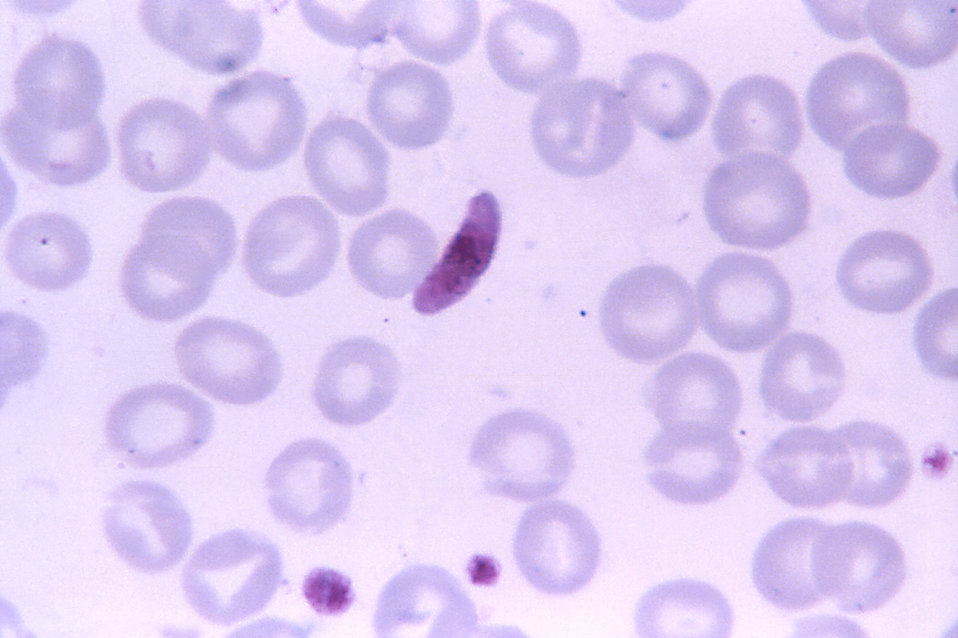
This thin film blood smear micrograph depicts a Plasmodium falciparum parasite microgametocyte.